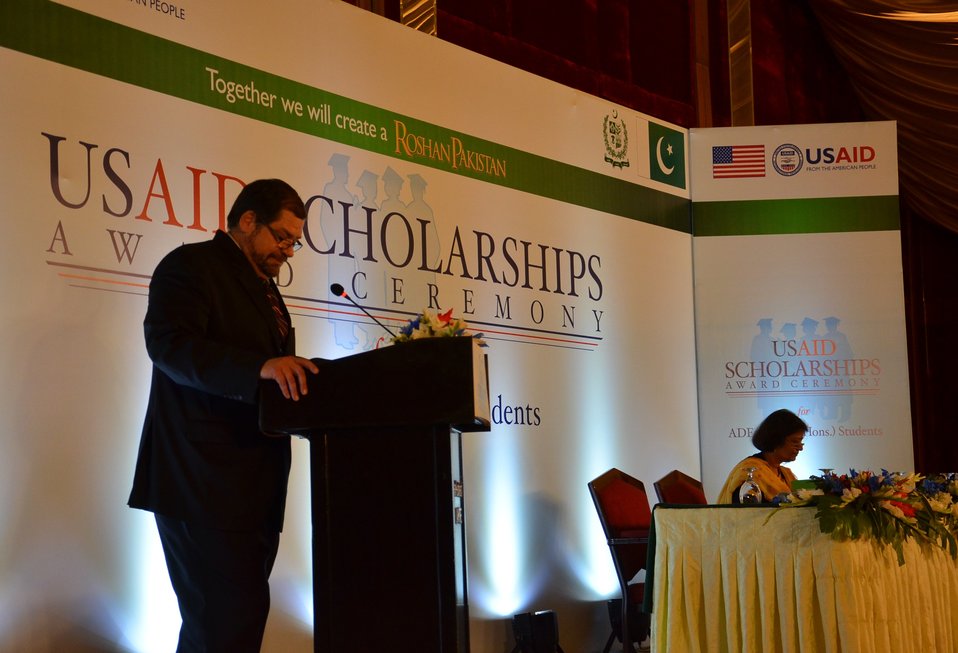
Mr. Bakken addressing participants of the ceremony